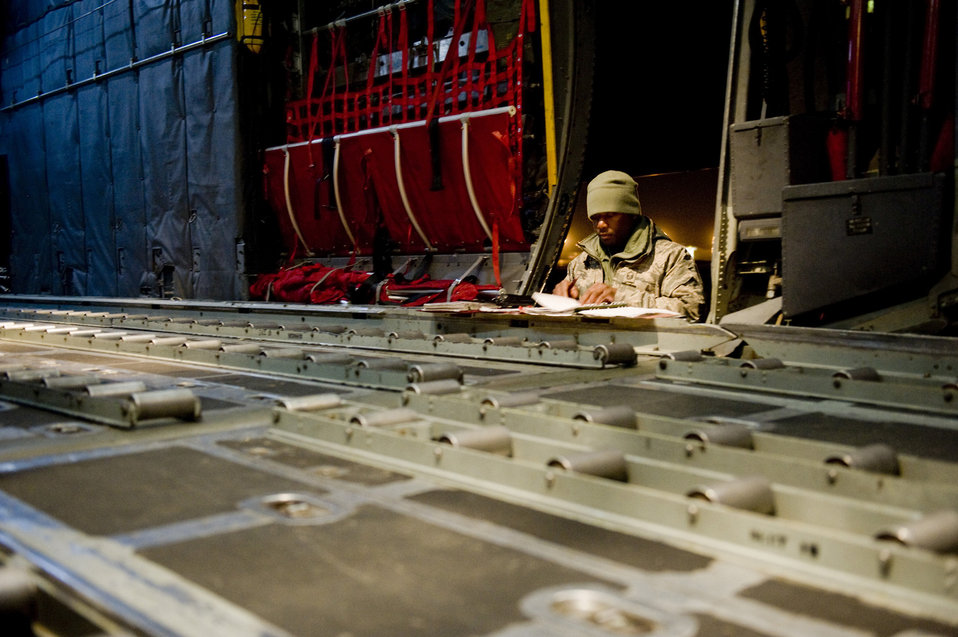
36th Airlift Squadron provides warmth to Sendai Airport

Master Sgt. Marlin Sherwin prepares paperwork on a C-130H Hercules prior to take-off March 18, 2011, at Yakota Air Base, Japan. Airmen from the 36th Airlift Squadron provided blankets to Sendai Airport in support of Japan's earthquake and tsunami relief efforts. Sergeant Sherwin is assigned to the 374th Aircraft Maintenance Squadron.